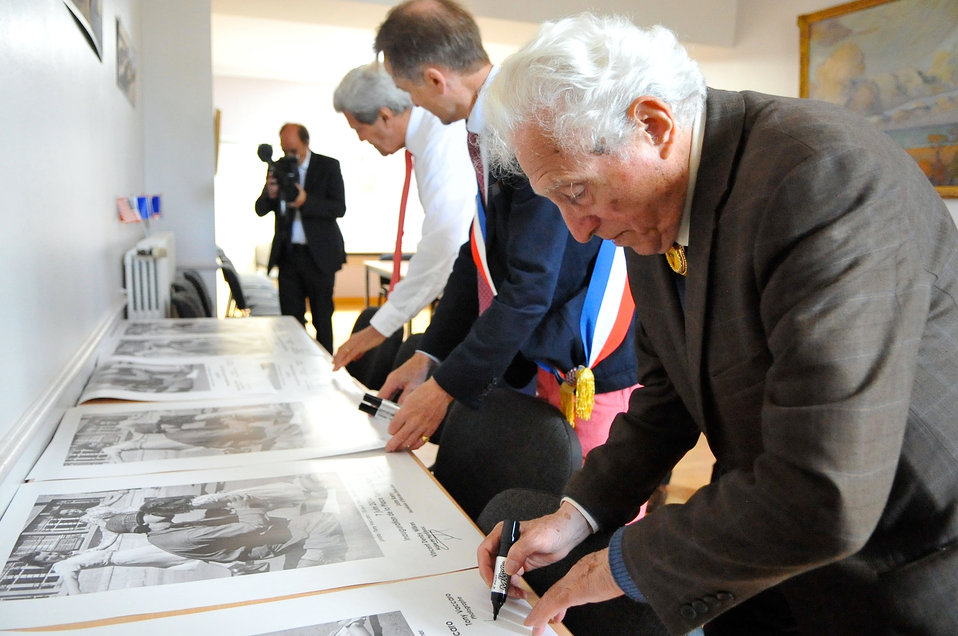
Secretary Kerry, Mayor Denby-Wilkes, Photographer Vaccaro Sign Posters of Famed WWII Picture

U.S. Secretary of State John Kerry, Mayor Vincent Denby-Wilkes, and World War II photographer Tony Vaccaro sign posters of Vaccaro's most famed photo on June 7, 2014, as they attended a ceremony in Saint Briac, France, to commemorate the 70th anniversary of D-Day, and to rename the town square in Vaccaro's honor.